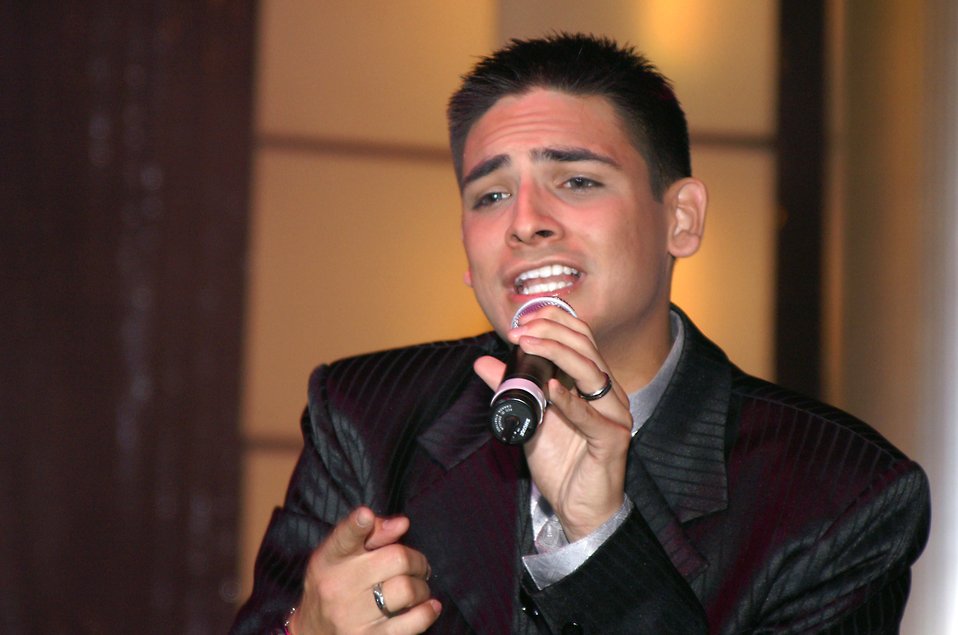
11 sing, dance their way to Worldwide Talent Contest honors

Senior Airman Rick Rosales, a dental journeyman stationed at Osan Air Base, Korea, performs his winning number